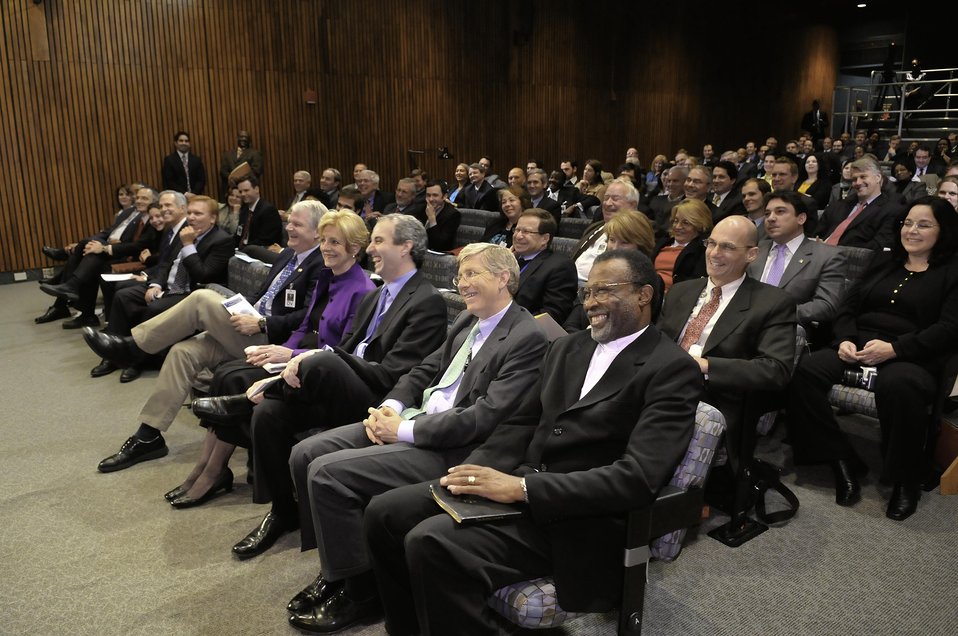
DSC20~3